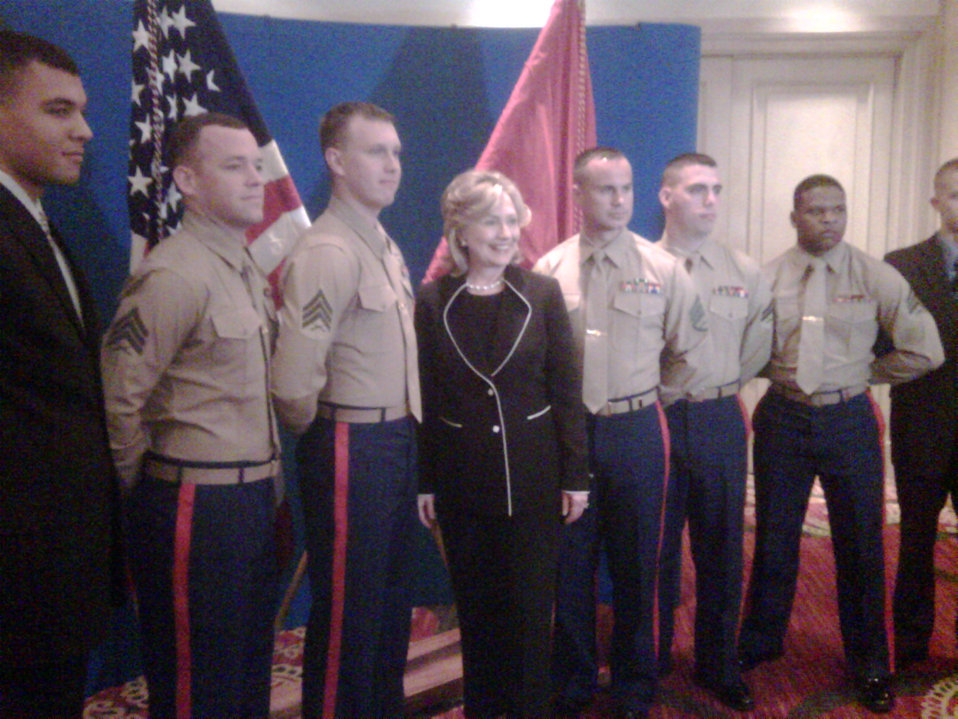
Secretary Clinton With Marines at the U.S. Embassy in Costa Rica

U.S. Secretary of State Hillary Rodham Clinton stands with U.S. marines at the U.S. Embassy in San Jose, Costa Rica, March 5, 2010.